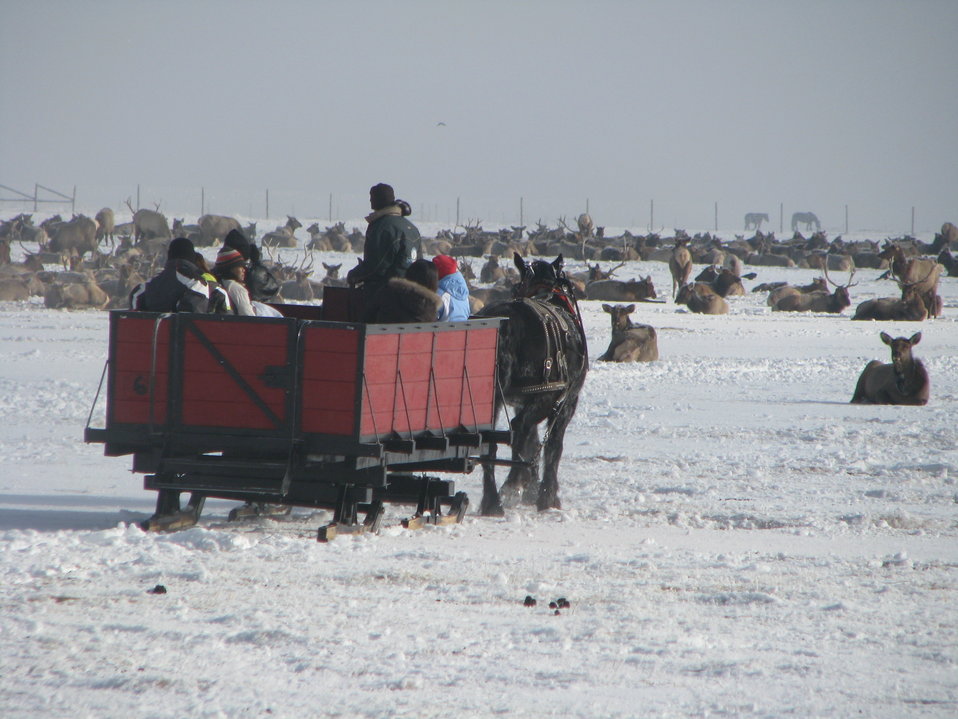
Winter Sleigh Ride

Visitors to the National Elk Refuge have a unique opportunity for wildlife viewing during the winter by way of a horse-drawn sleigh.